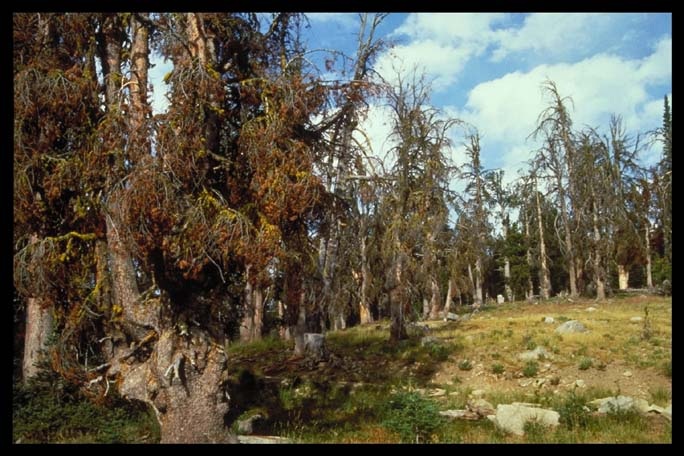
Landscape